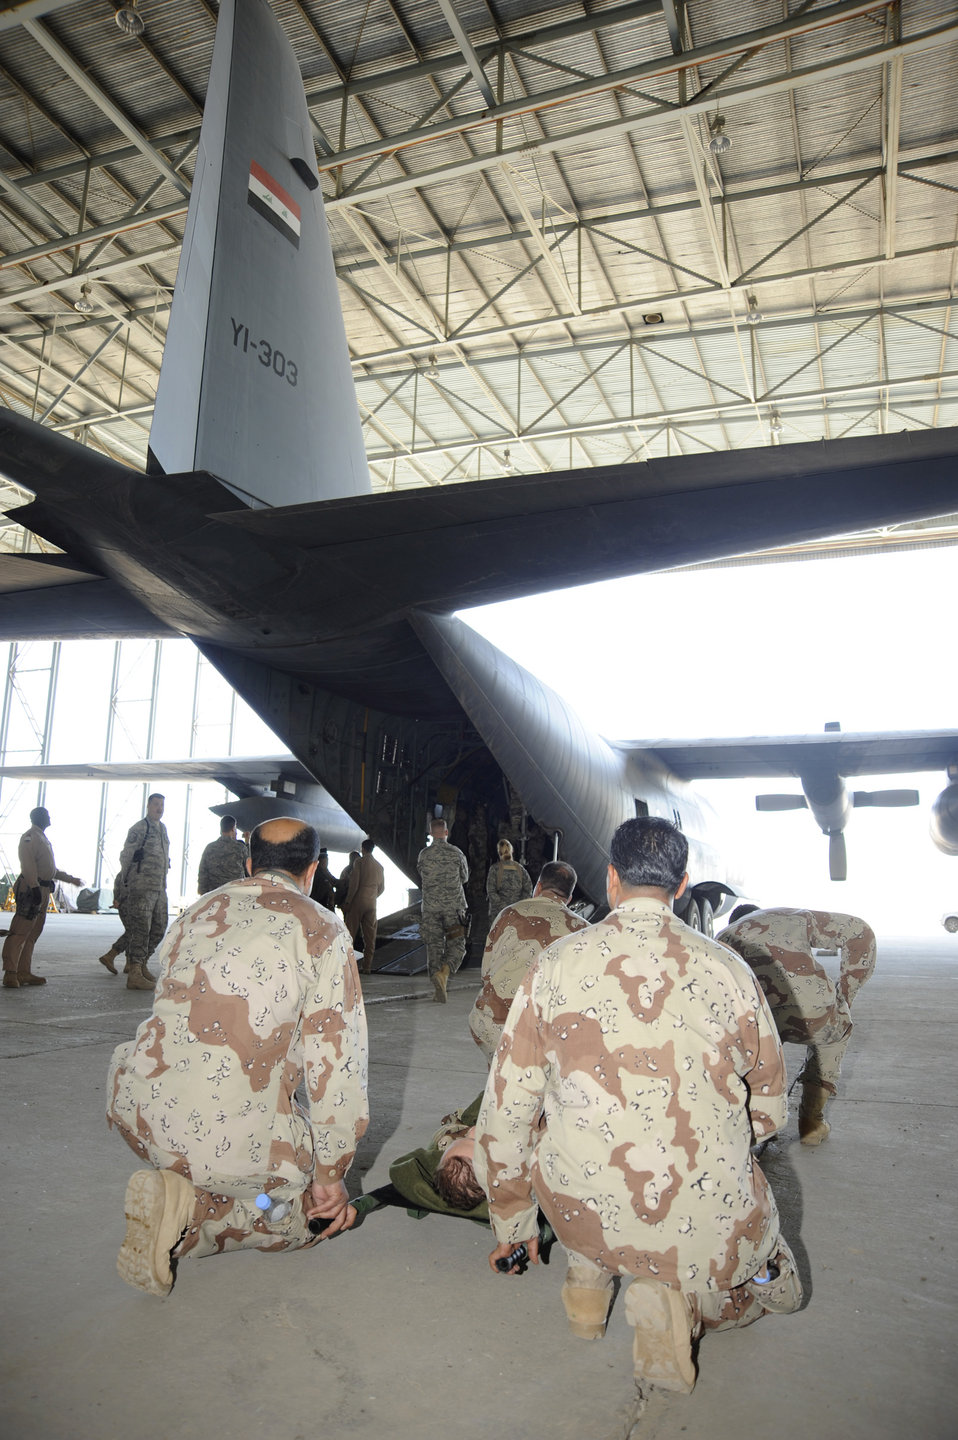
Iraqi medics complete aeromedical evacuation course

Iraqi air force medics prepare to load a mock patient into a C-130 Hercules aircraft for a demonstration for Iraqi senior leadership during their graduation ceremony at New Al-Muthana Air Base, Iraq, Dec. 4. The Iraqi airmen completed a 12-day aeromedical evacuation basics course that covered reconfiguring a cargo aircraft into a medical patient aircraft, creating a load plan of patients and coordinating with ground support to load patients.